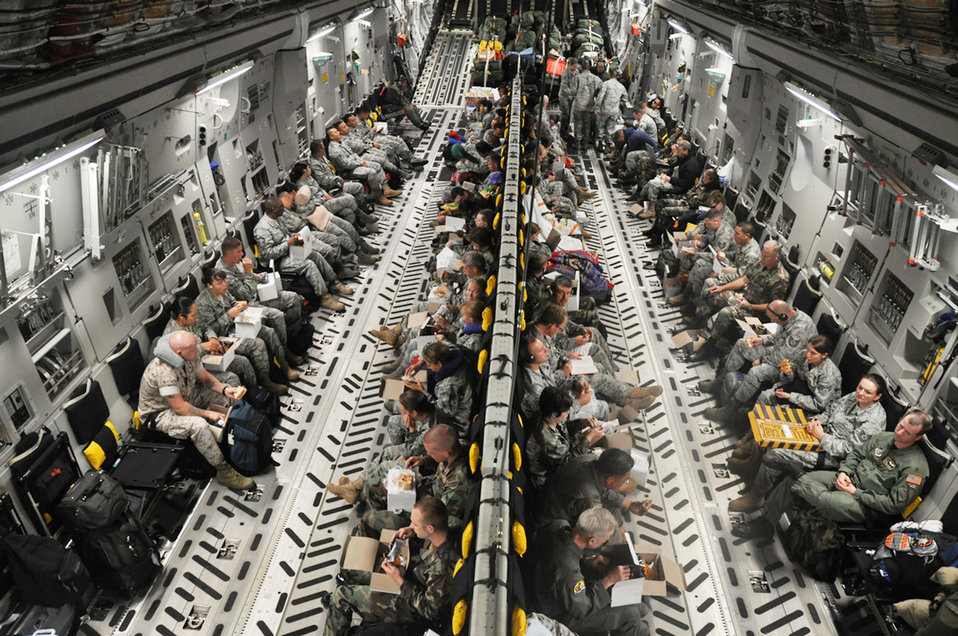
Hawaii Guard members give Pacific Angel a lift

Medical and engineering Airmen from various bases across the Air Force get some rest aboard a C-17 Globemaster III July 15 en route to Kupang, Indonesia. An aircrew from the Hawaii Air National Guard's 204th Airlift Squadron at Hickam Air Force Base, Hawaii, delivered the people and equipment for the operation.